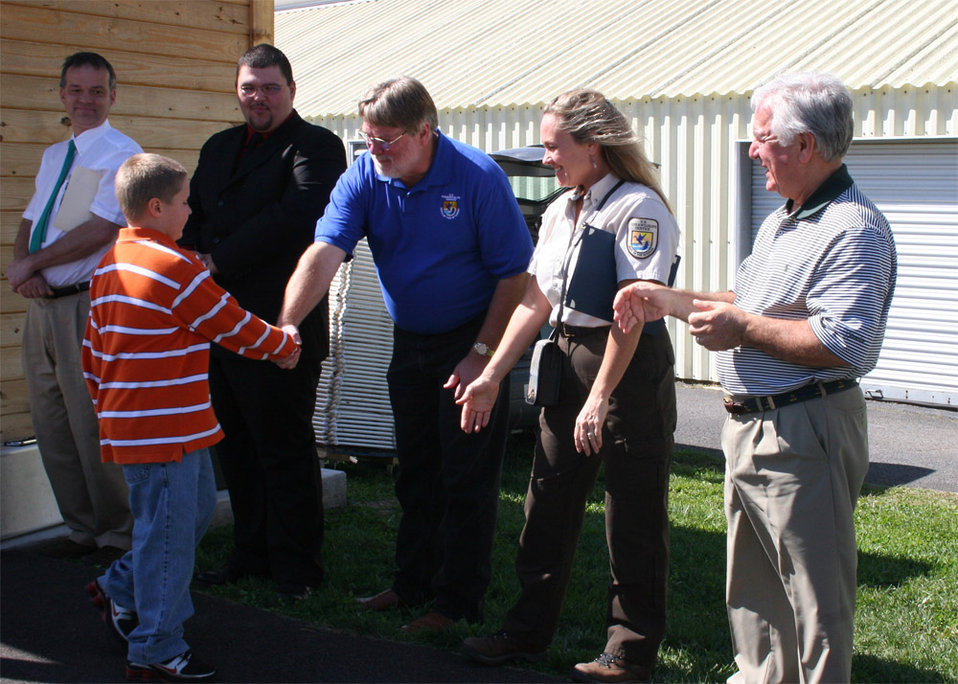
Freshwater Folk Festival

The 5th Annual Freshwater Folk Festival at White Sulphur Springs National Fish Hatchery in West Virginia.Credit: USFWS